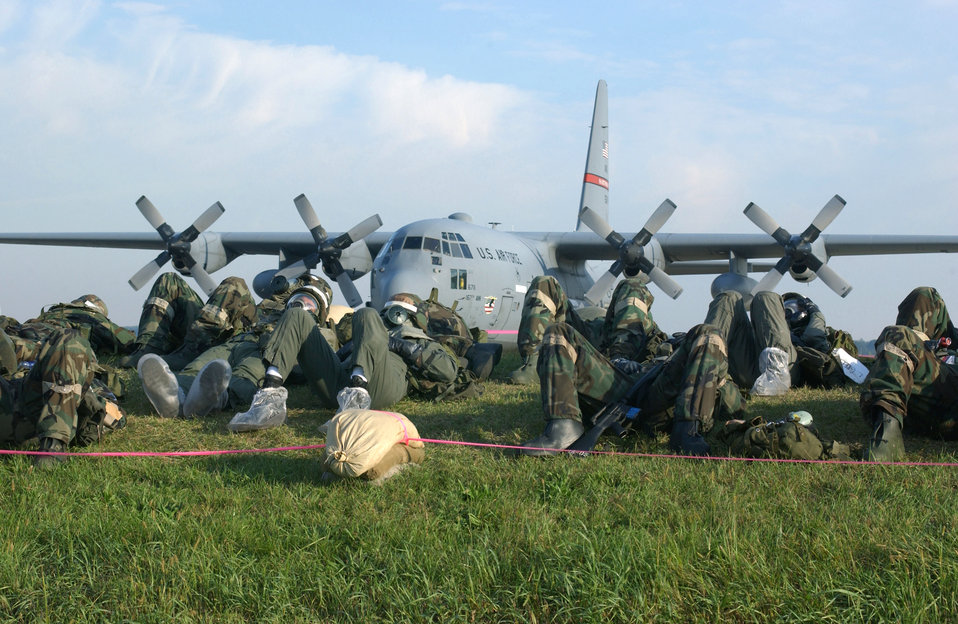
Take cover

VOLK FIELD AIR NATIONAL GUARD BASE, Wis. -- Airmen from the West Virginia Air National Guard simulate taking shelter in a bunker during readiness training here recently. The Airmen are assigned to the 167th Airlift Wing in Martinsburg, W. Va.